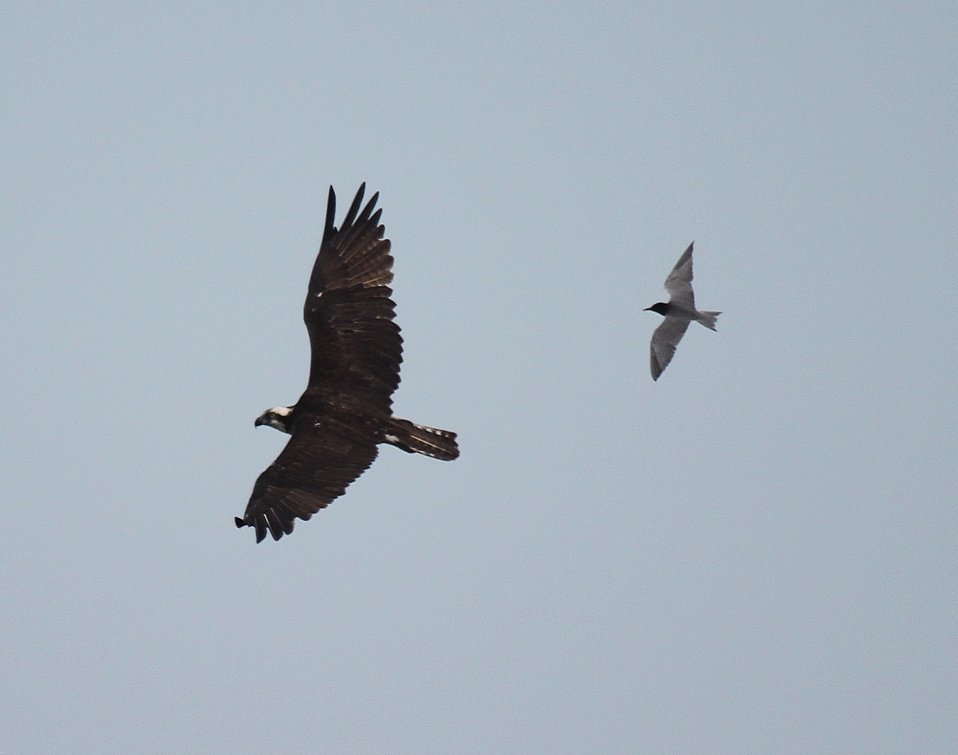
Black tern and Osprey flying at Missisquoi National Wildlife Refuge